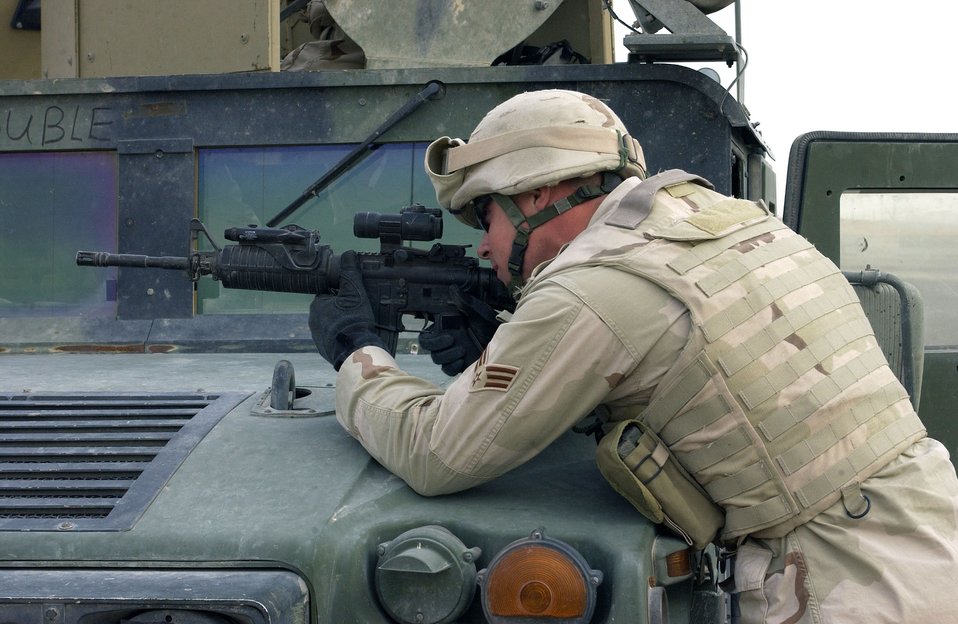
Convoy ops

CAMP BUCCA, Iraq (AFPN) -- Senior Airman Micah Lenamond provides cover for a passing convoy. More than 700 Airmen are deployed here providing security for the base, the Theater Internment Facility and convoy operations. Airman Lenamond a convoy driver is deployed here from Randolph Air Force Base, Texas with the 586th Expeditionary Security Forces Squadron.